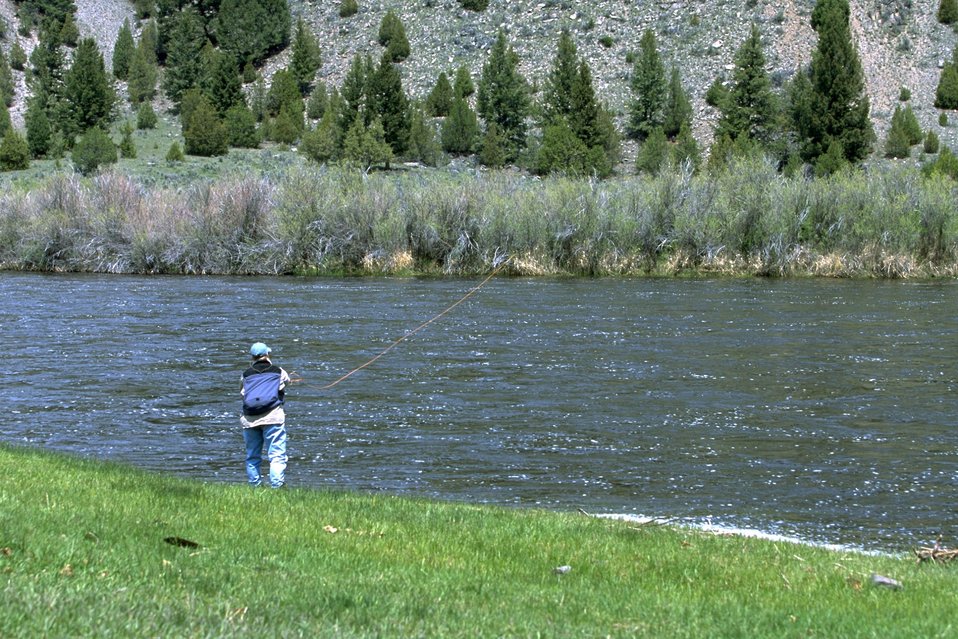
Fly fishing on the Big Hole River